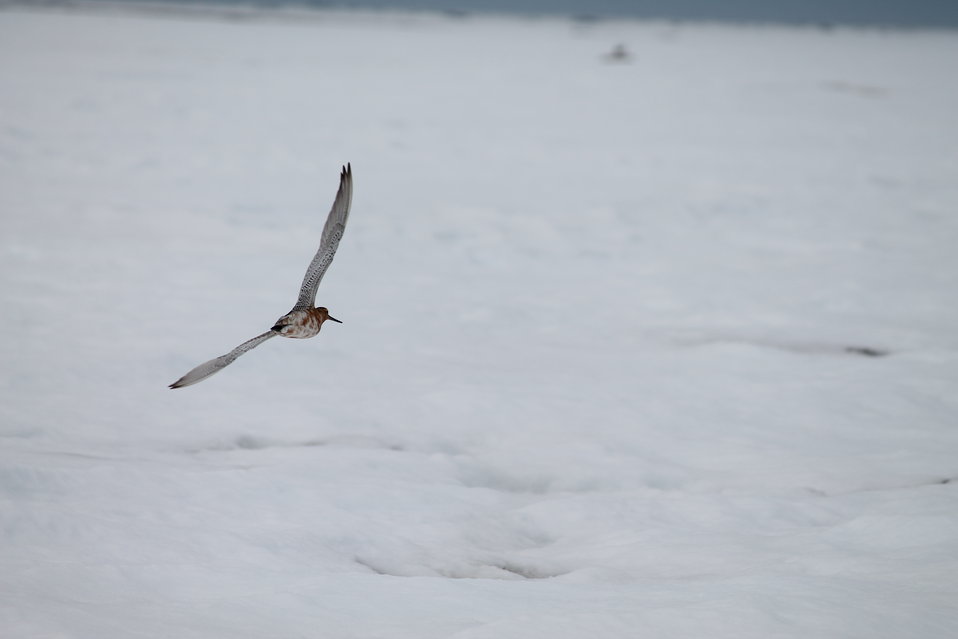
Flight of the Godwit

Bar-tailed godwits breaed on the Yukon-Kuskokwim Delta. In 2007, a female bar-tailed godwit flew 7,145 miles (11,500 kilometers) nonstop from Alaska to New Zealand—without taking a break for food or drink!!

USFWS Yukon Delta NWR